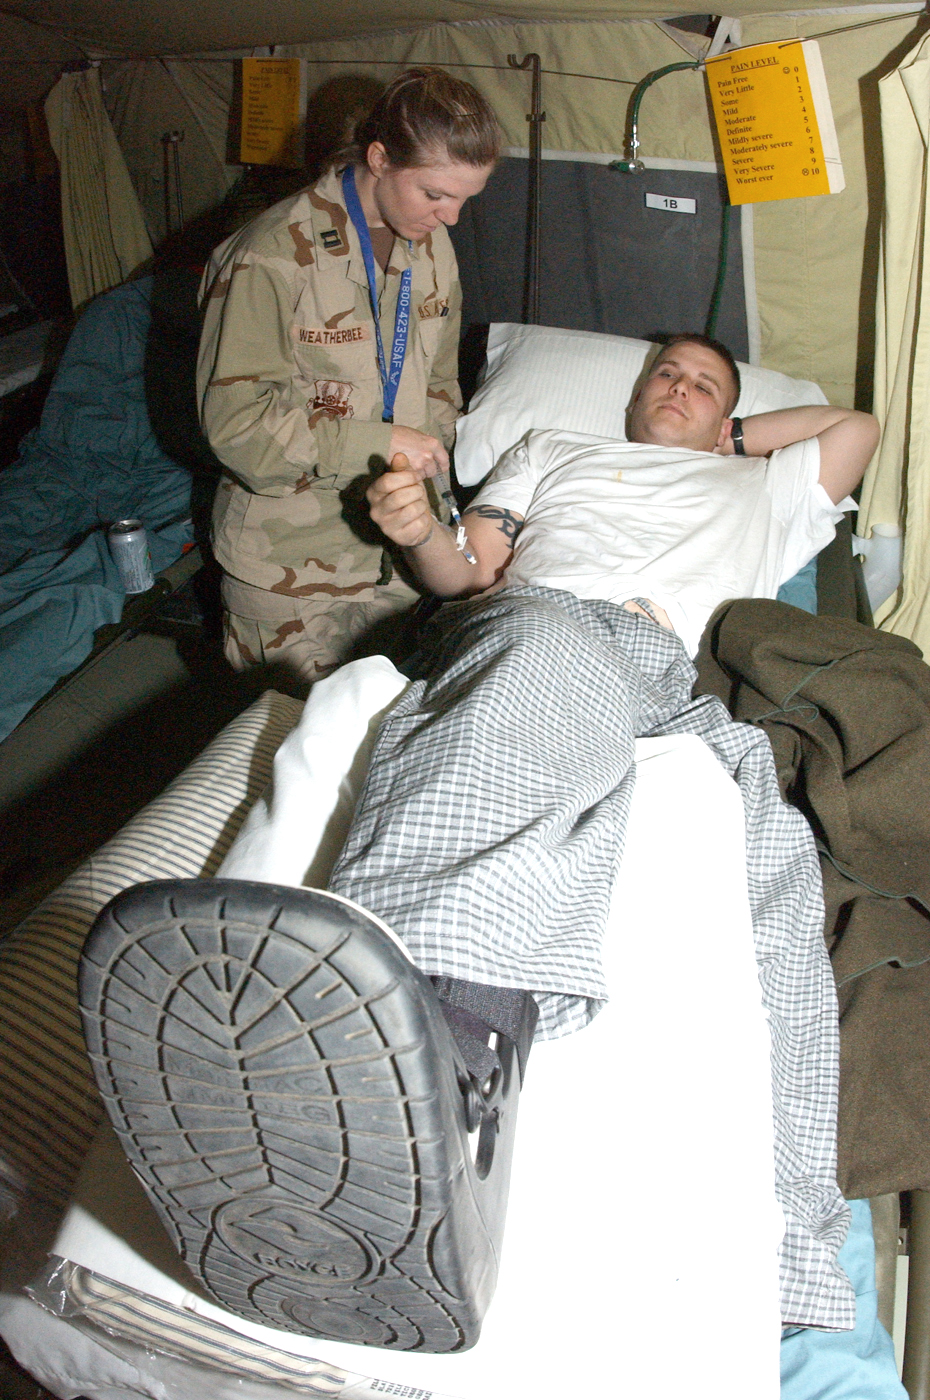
Lackland medics support OIF evacuation mission

BALAD AIR BASE, Iraq -- Capt. Tamra Weatherbee gives medication to Army Pfc. Matt Baugh at the contingency aeromedical staging facility here Jan. 16. Captain Weatherbee is a staff nurse at the facility and is deployed from the 859th Medical Operations Squadron at Lackland Air Force Base, Texas. Private Baugh is a member of the Army's 15th Infantry Division deployed from Fort Lewis, Wash.